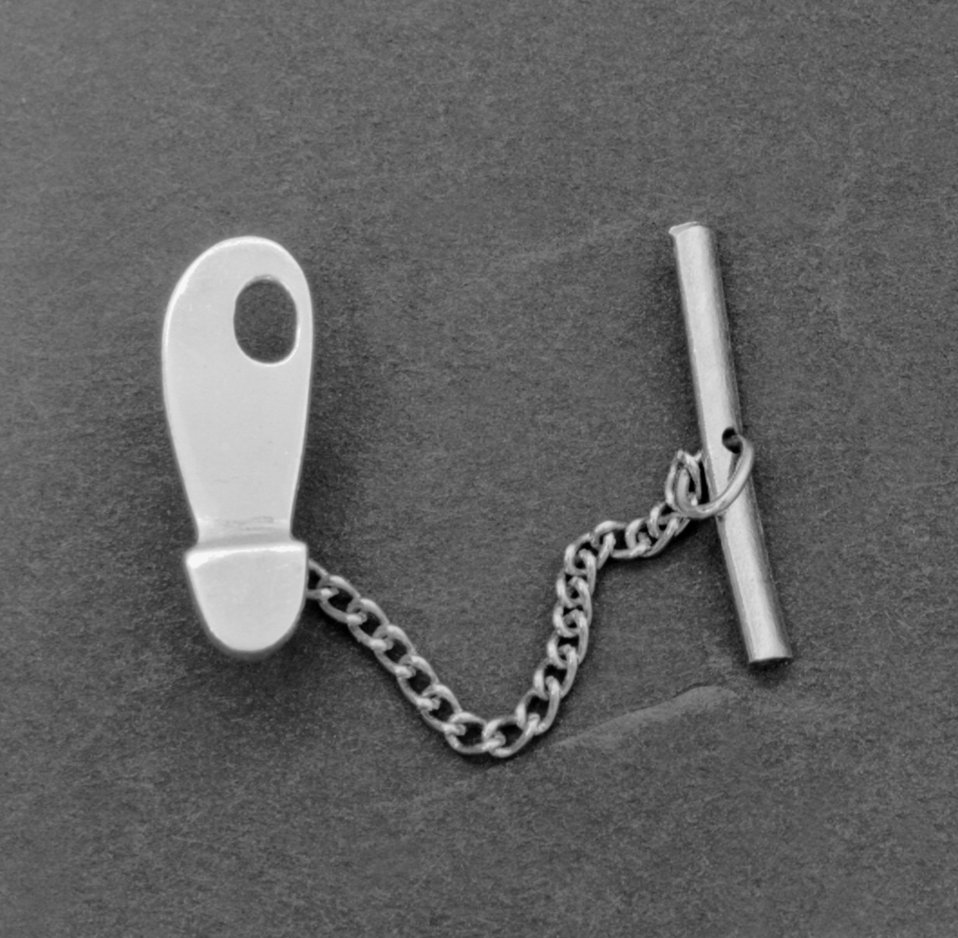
Photo of a Shoe-leather chain, symbolizing the work of the EIS Officer in the field.